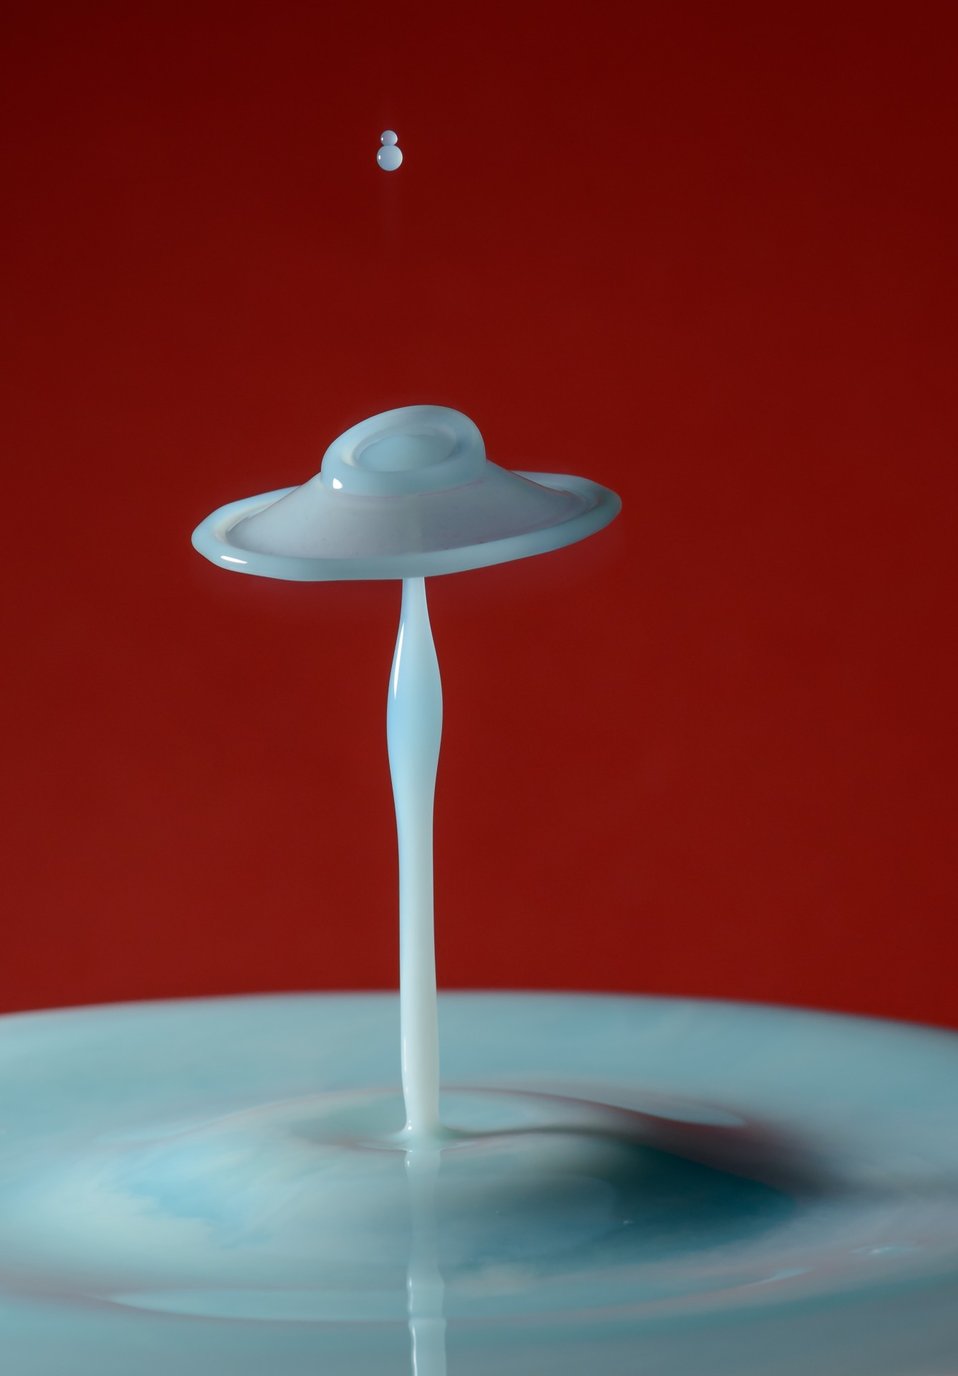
Blue hat

Two drop collision.